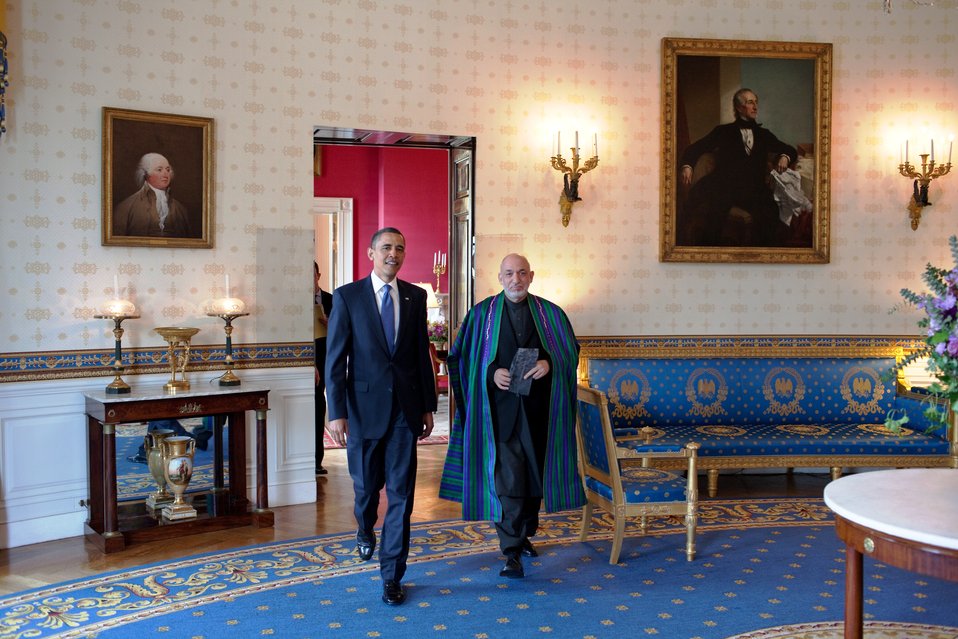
President Obama Welcomes Afghan President Karzai to the White House

President Barack Obama welcomes President Hamid Karzai of Afghanistan to the White House in Washington, D.C., on May 12, 2010.